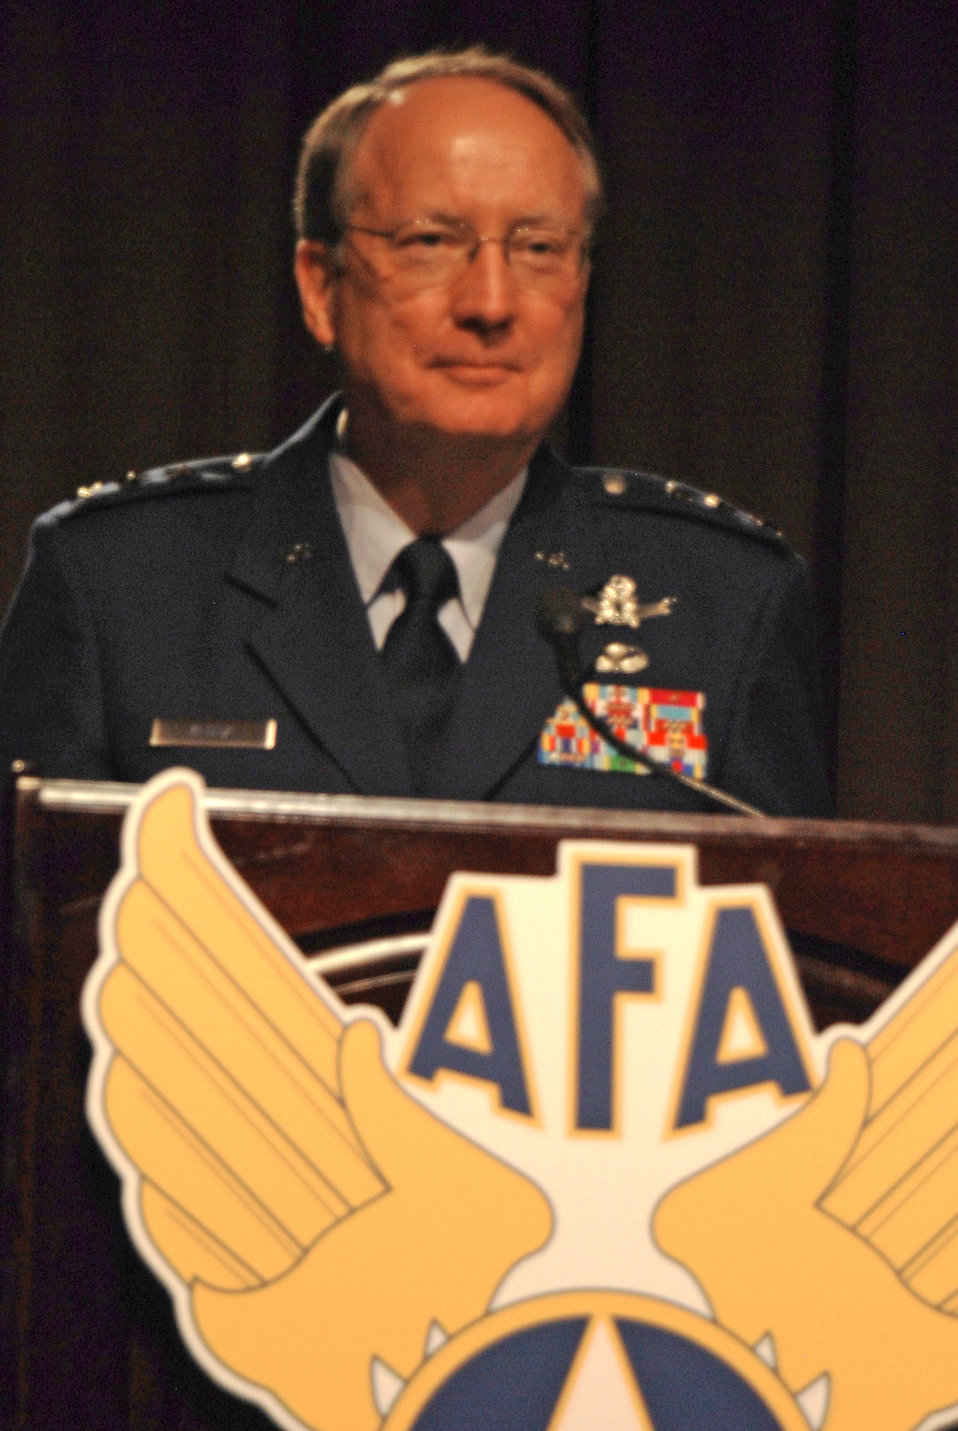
Air Force leaders speak at 2009 Global Warfare Symposium

Lt. Gen. Frank G. Klotz outlines the service's nuclear deterrence and global strike missions at the 2009 Air Force Association Global Warfare Symposium Nov. 19, 2009, in Los Angeles. Senior leaders addressed such issues as space, cyberspace and deterrence to Airmen, civilians and industry partners. General Klotz is the commander of Air Force Global Strike Command.